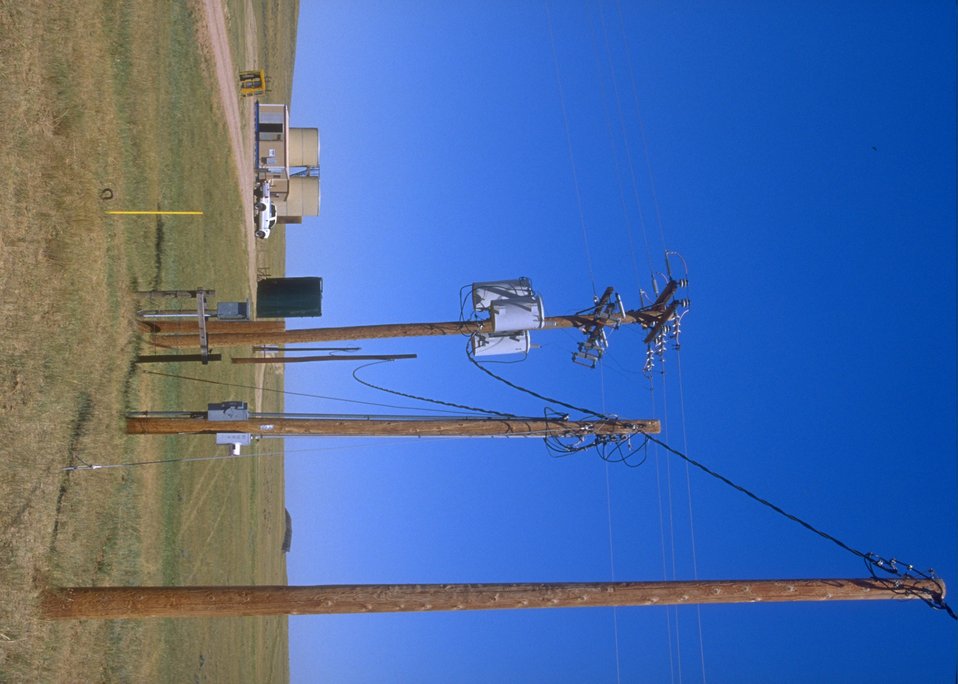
Oil well and associated facilities, Buffalo Field Office.